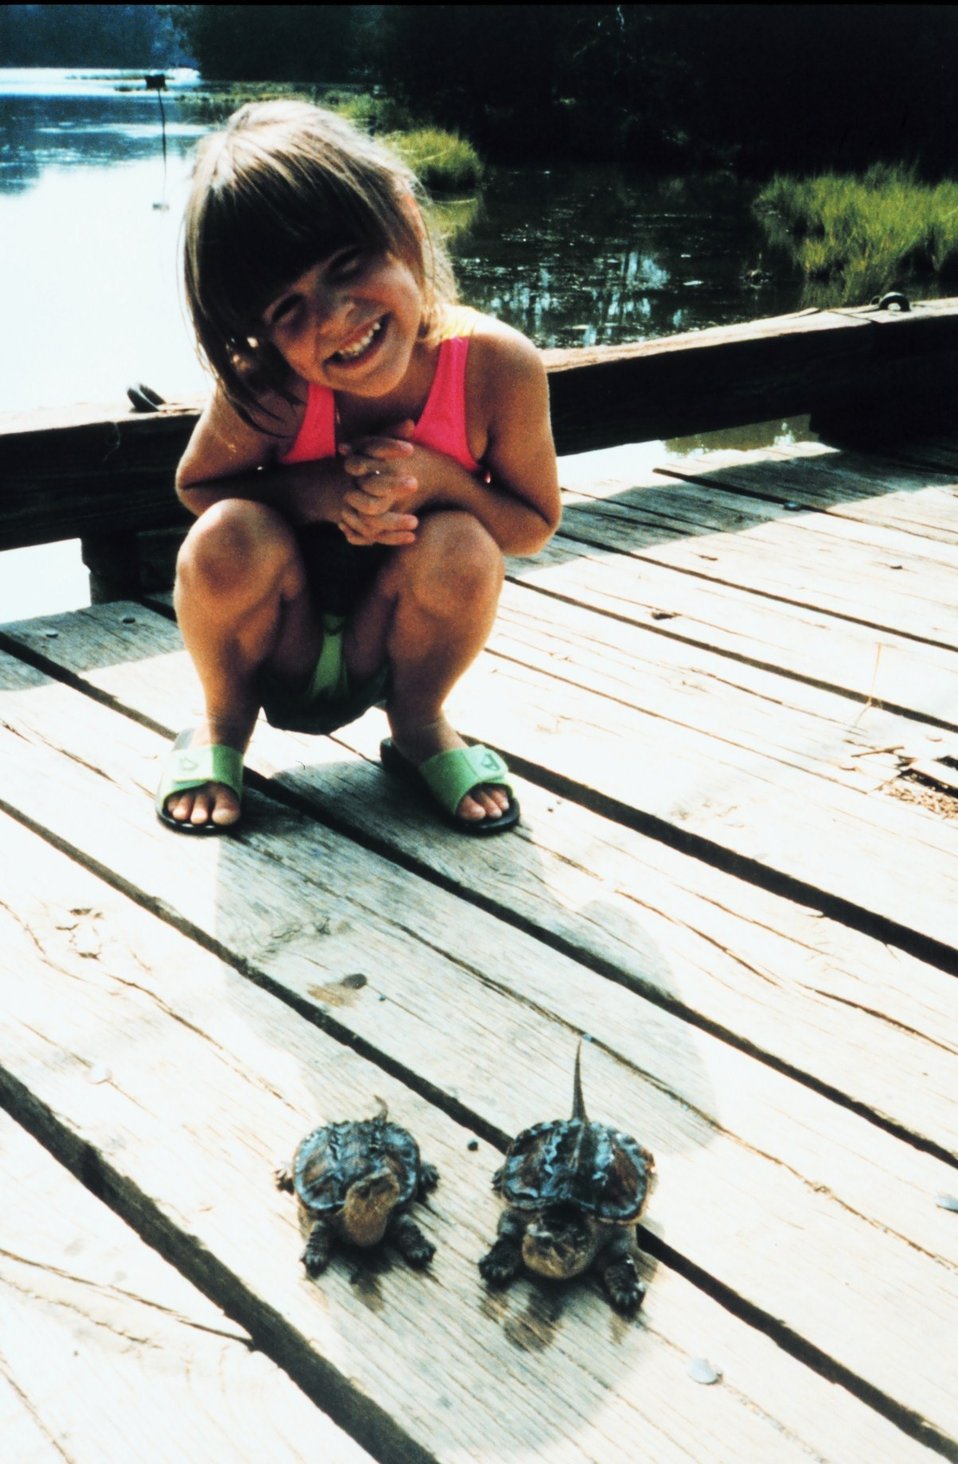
Juvenile human inspecting juvenile alligator snapping turtles.